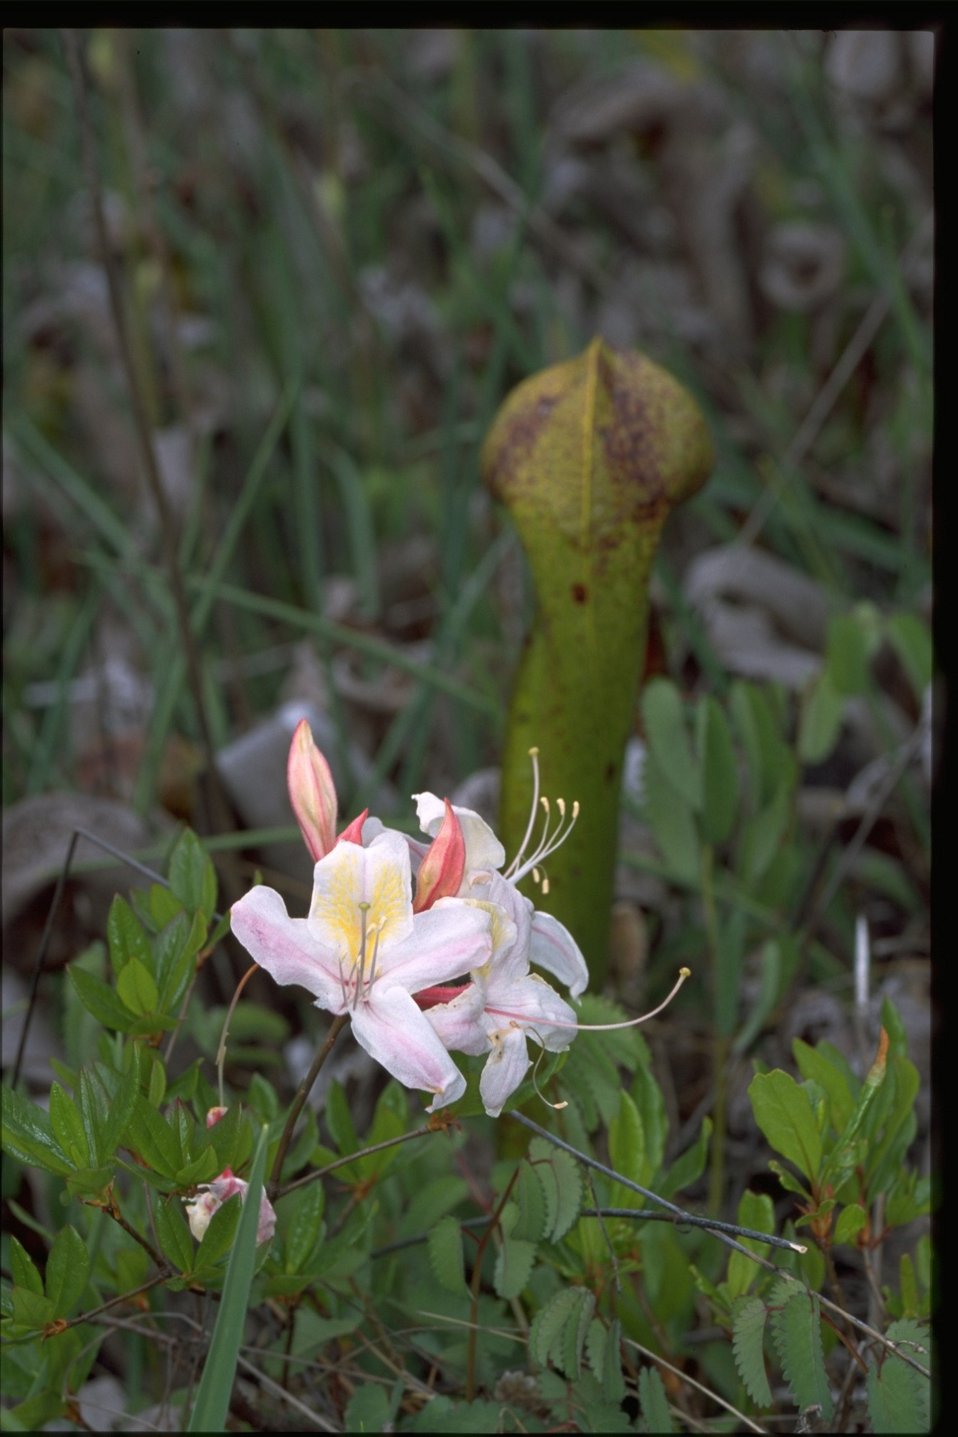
Medium shot of Darlingtonica californica (Cobra Lily) and Rhododendron occidentale.